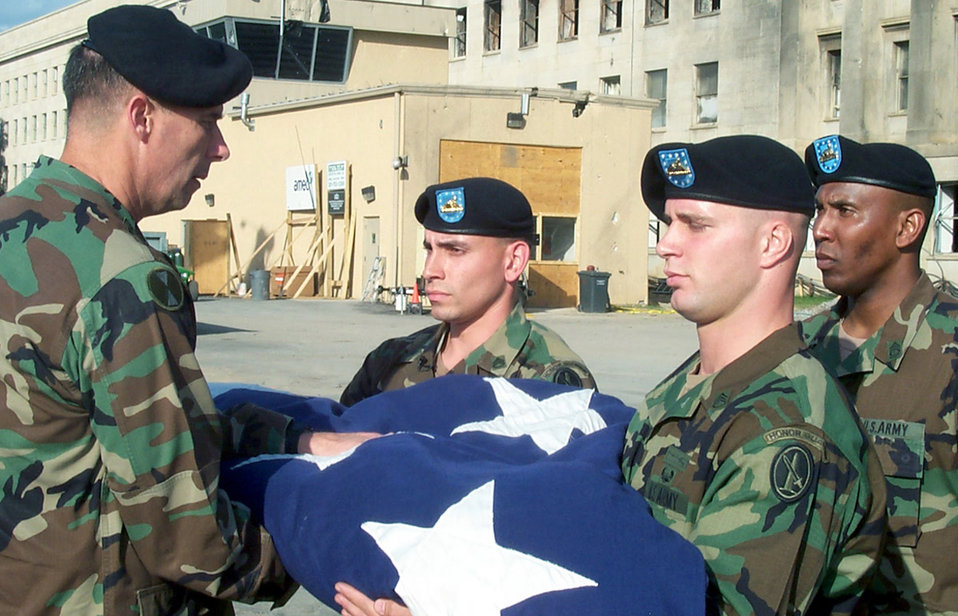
WASHINGTOM -- Soldiers from A Company, 3rd Infantry,